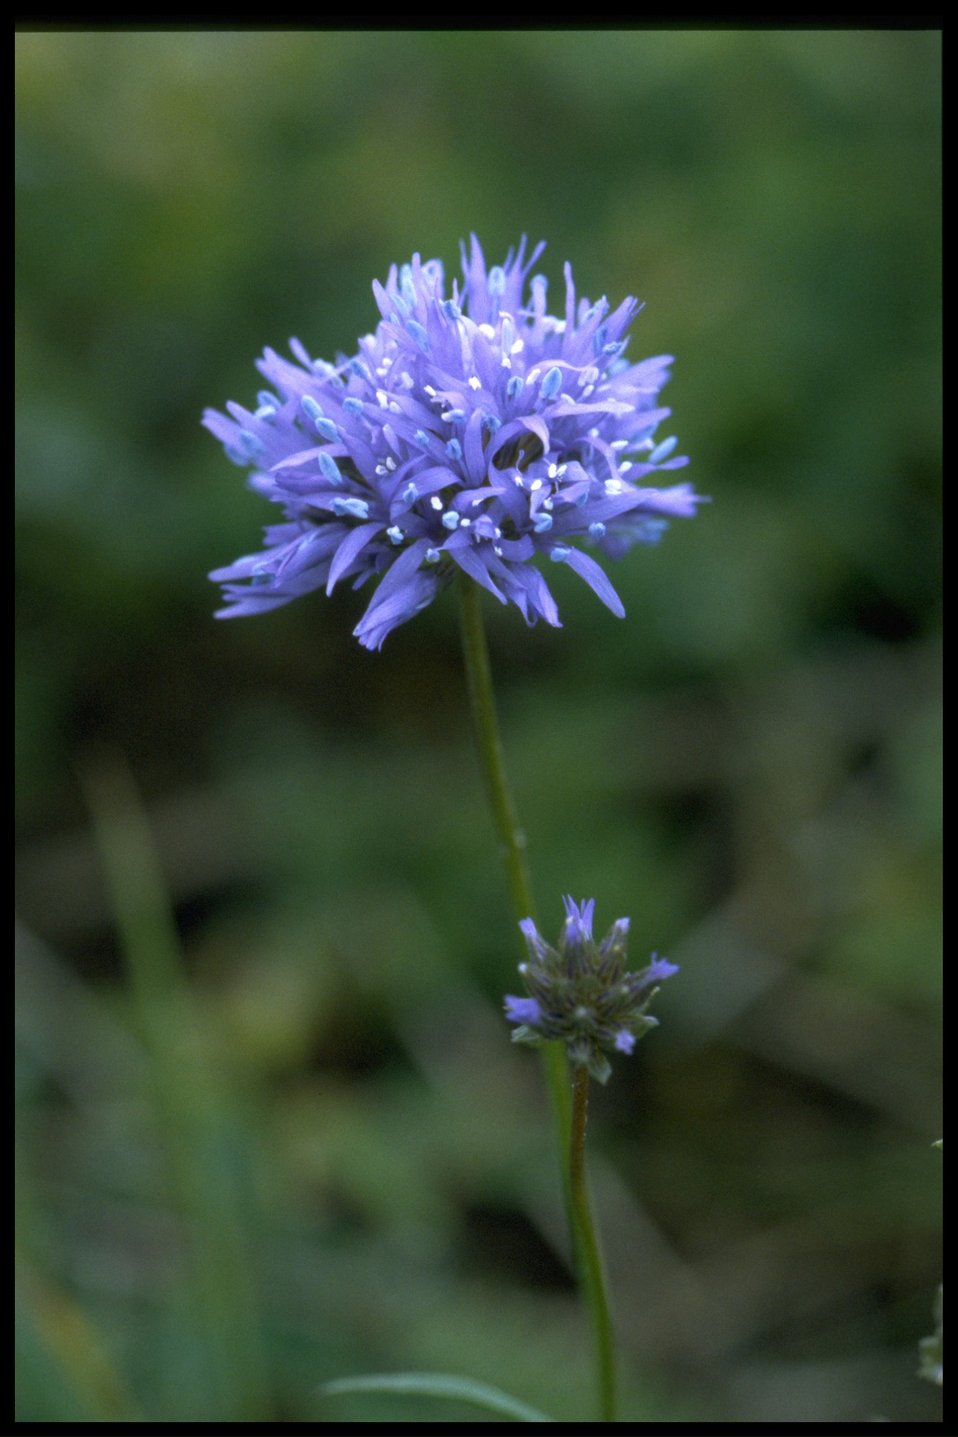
Closeup shot of Gilia (Ipomopsis) Capitata.